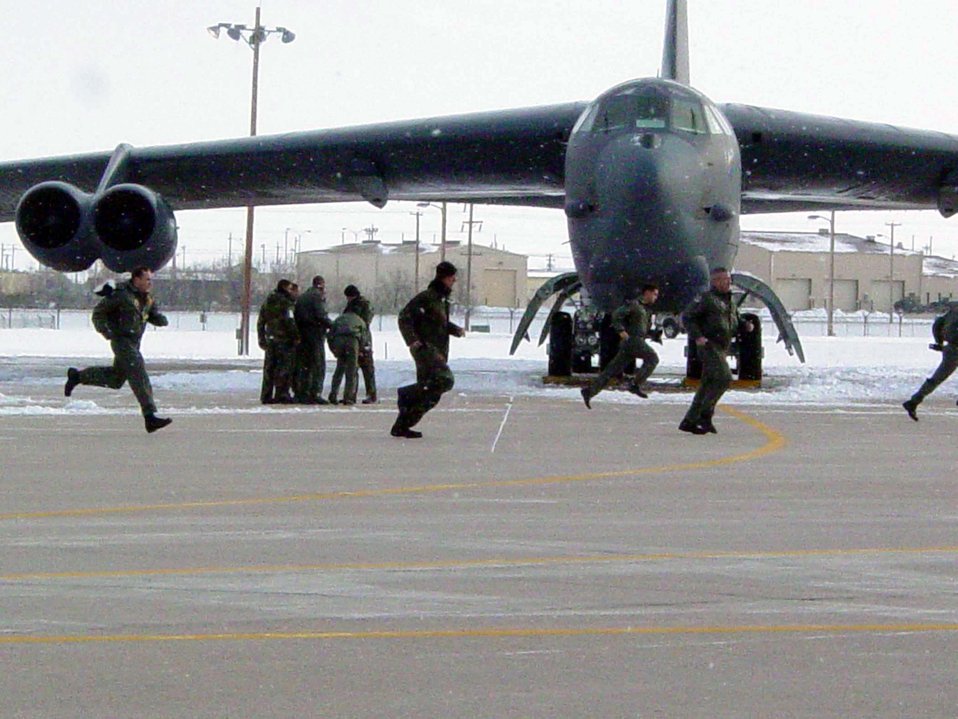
Run for your plane

MINOT AIR FORCE BASE, N.D. -- B-52 Stratosfortress crews run toward their assigned aircraft during an exercise here Oct. 31, despite a winter storm that passed through the area. The storm reduced temperatures to 26 degrees, and dropped six inches of snow.